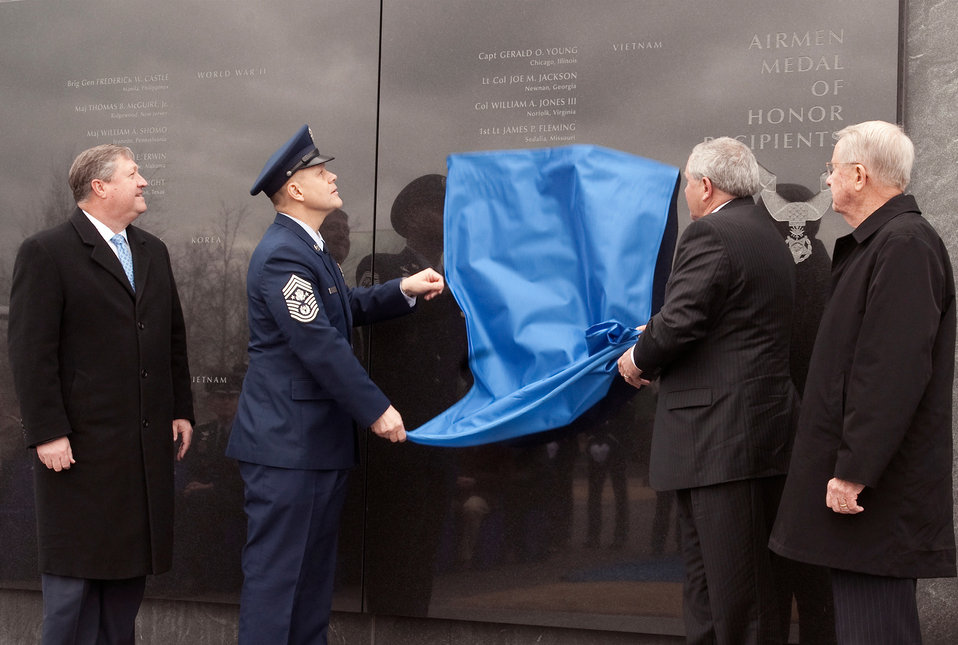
CMSgt Etchberger unveiling ceremony

Secretary of the Air Force Michael Donley (left) and retired Chief Master Sgt. John McCauslin (right) look on March 11, 2011, as Chief Master Sgt. of the Air Force James Roy and Corey Etchberger unveil Medal of Honor recipient Chief Master Sgt. Richard L. Etchberger's name March 11, 2011, which was added to the Air Force Memorial in Arlington, Va.